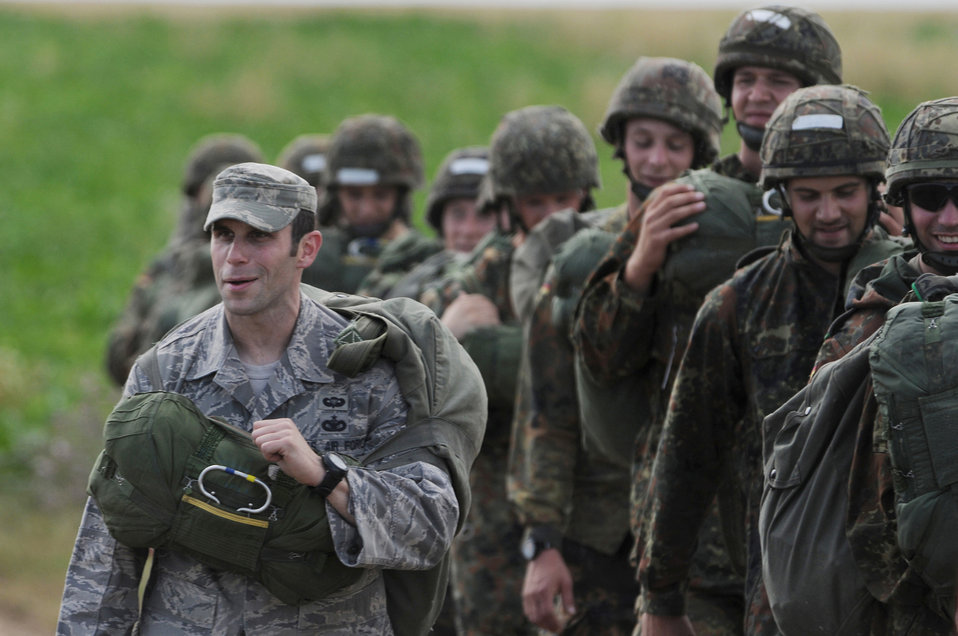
5 NATO countries take part in jump week

Staff Sgt. Joseph Klimaski walks off the field with German soldiers after landing at the Bunker drop zone Aug. 13 in southwestern Germany. U.S. Soldiers and Airmen performed a combined airborne jump with four other NATO countries during International Jump Week. Sergeant Klimaski is assigned to the 435th Security Forces Squadron.